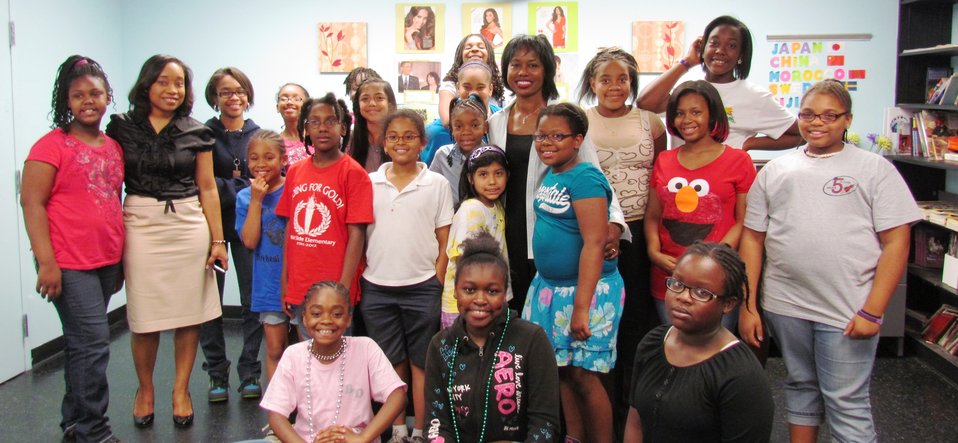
Women in STEM Speakers Bureau

Dot Harris is part of the White House Council of Women and Girls STEM speakers bureau. On May 18, 2012, she spoke with participants in the Girls, INC, afterschool program in Atlanta, GA.